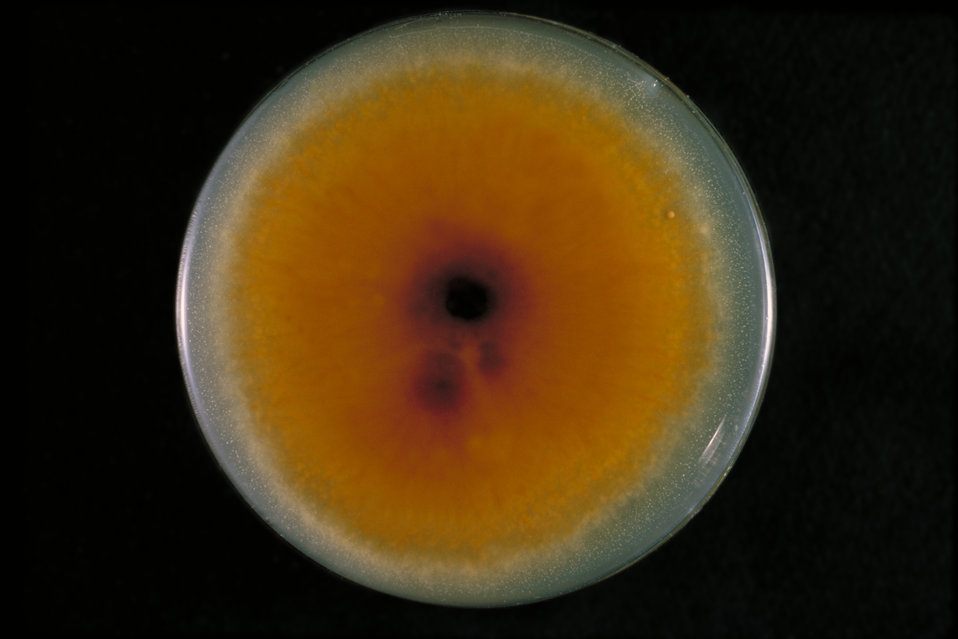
The bottom view of a plate culture containing the fungus Trichophyton mentagrophytes.